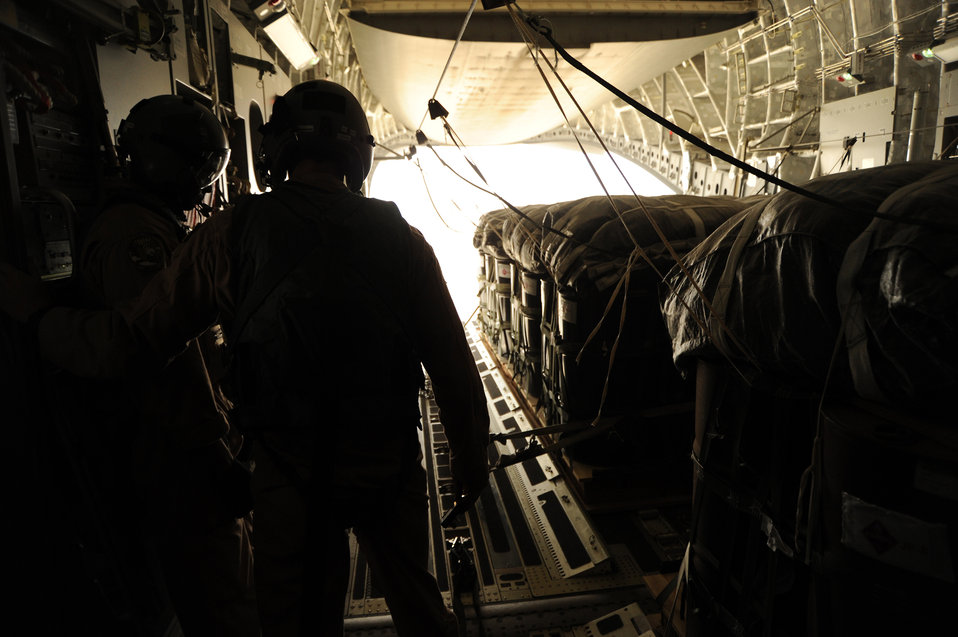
Operation Everest C-17 airdrop

1st Lt. Daniel Hartung and Staff Sgt. Hardia Madden watch as bundles of JP-8 fuel begin to exit a C-17 Globemaster III during an airdrop mission Aug. 13, 2010, over a drop zone in Southwest Asia. Lieutenant Hartung and Sergeant Madden are with the 816th Expeditionary Airlift Squadron.